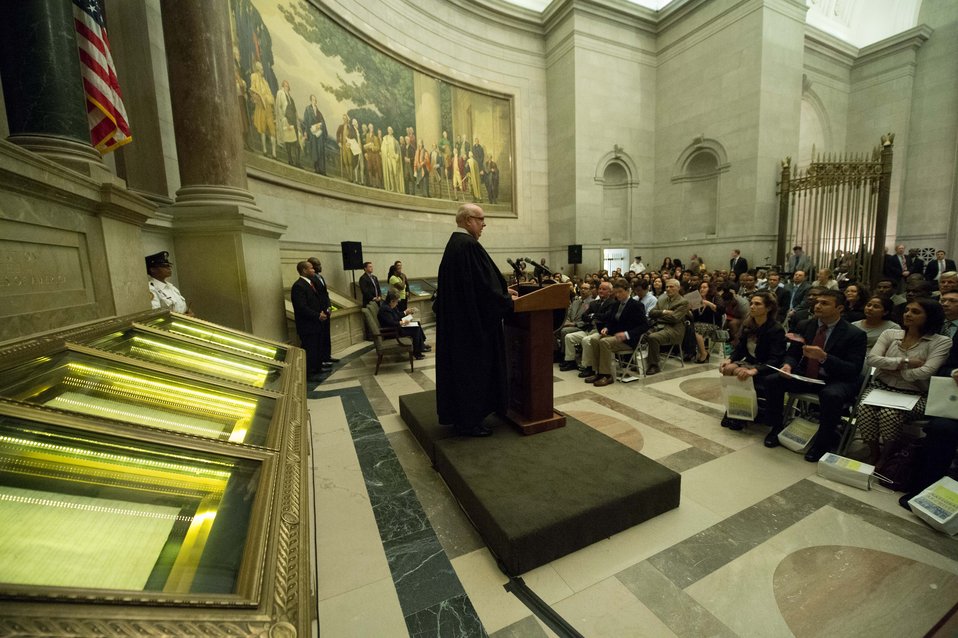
Constitution Day Naturalization Ceremony

The Honorable Royce Lamberth speaks to the petitioners